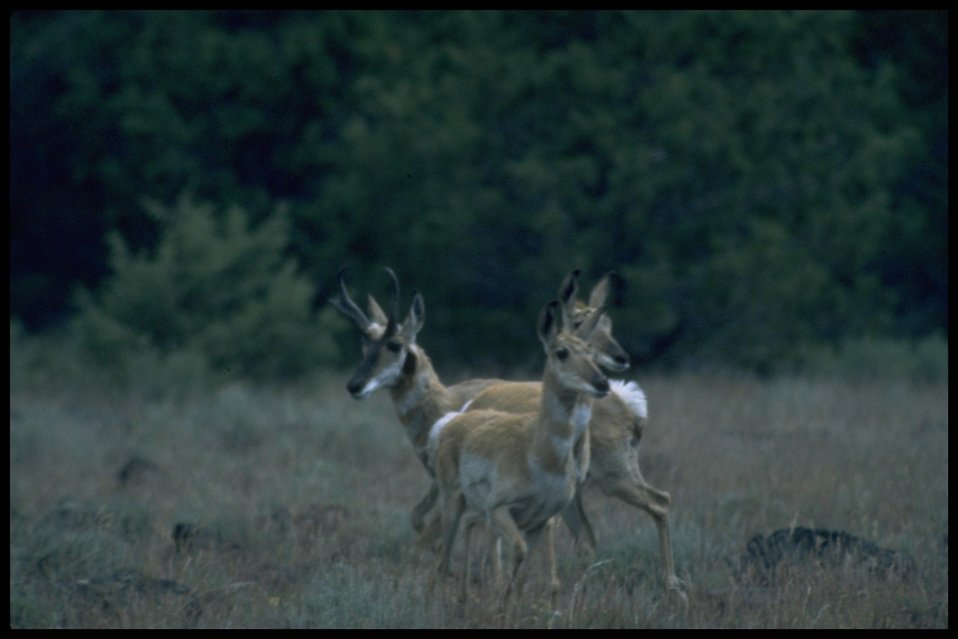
Far shot of Antelope, Lakeview District.